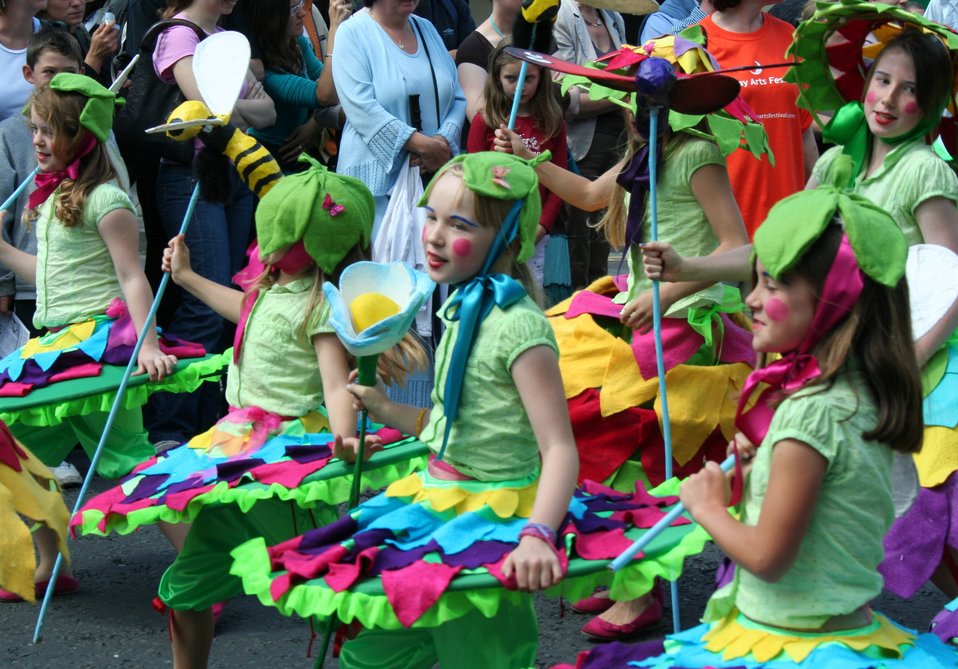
A scene from the Galway Arts Festival Parade 22 July 2007 Credit: A Peter Clarke image Category:Images of parades Category:Images of the Republic of Ireland